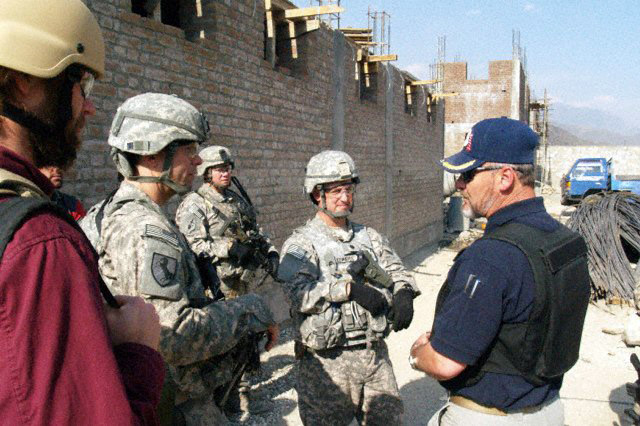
Del Moad discusses construction requirements with Kunar Provincial Reconstruction Team

Del Moad discusses prison security operations and construction requirements with Kunar Provincial Reconstruction Team leaders and engineers during a site visit to the Kunar Prison construction site Oct. 29, 2009, in the Kunar Province, Afghanistan. Correctional experts and PRT leaders and engineers visited the prison construction site to conduct a quality assurance check and address potential security concerns. Mr. Moad is the Corrections System Support Program team leader.